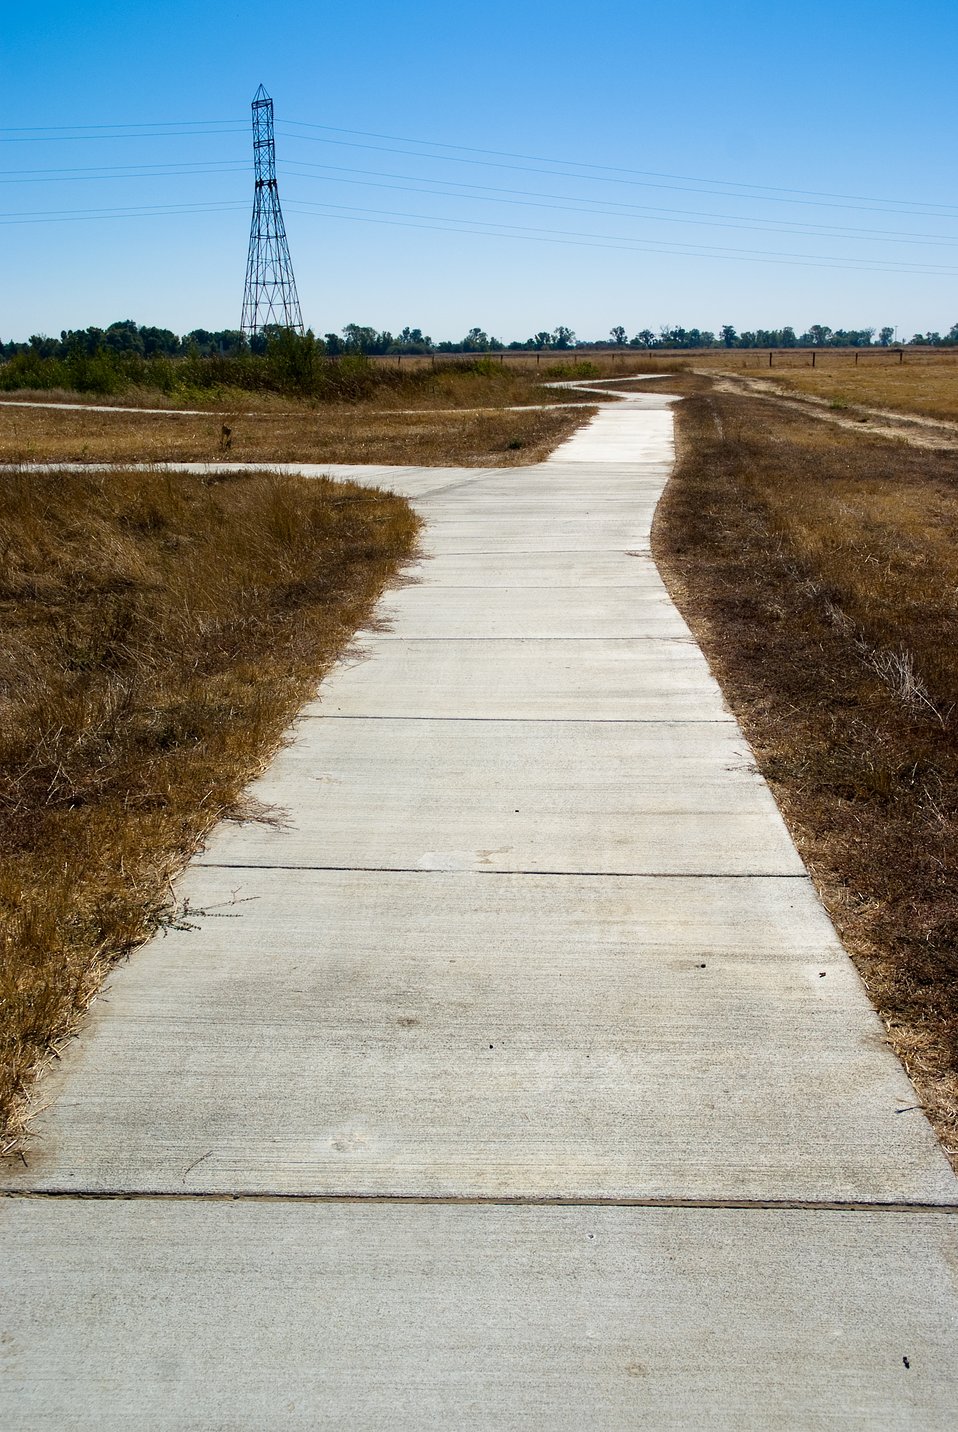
Blue Heron Trail

This trail was built with ARRA funds in 2010.